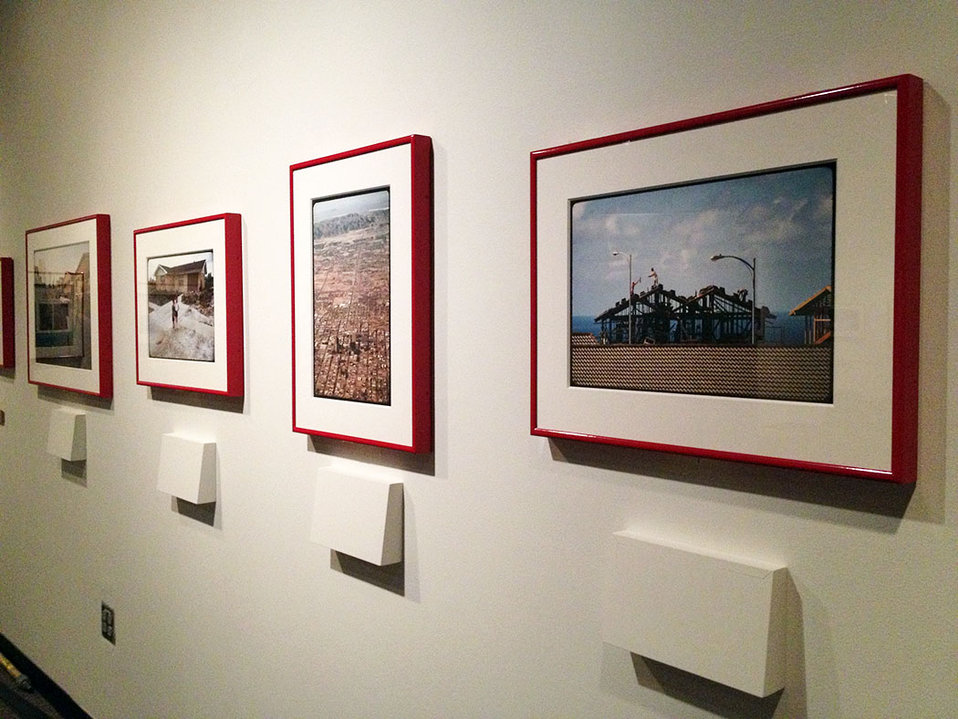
Documerica Installation

'Searching for the Seventies' framed photos and label blocks are installed. Exhibit Labels for each photograph coming soon!